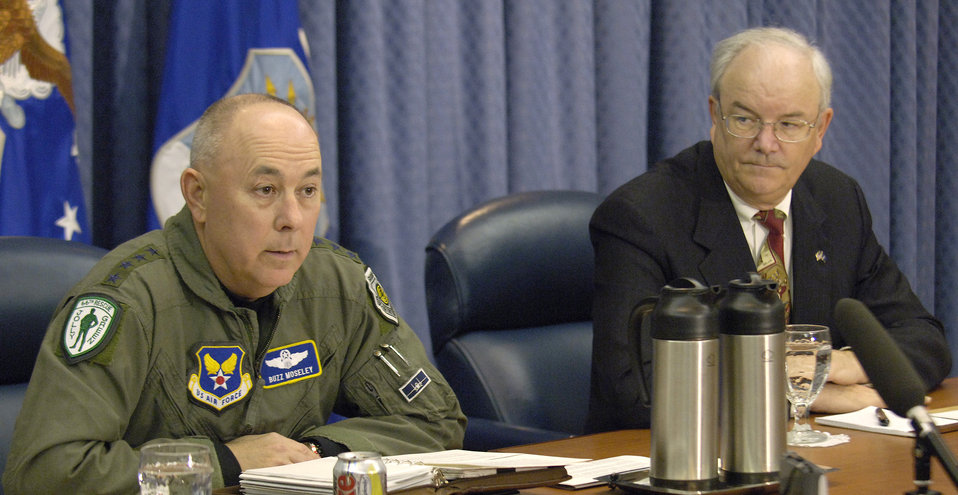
Media round table

WASHINGTON (AFPN) -- Chief of Staff of the Air Force Gen. T. Michael Moseley (left) -- with Secretary of the Air Force Michael W. Wynne at his side -- answers a reporter's question during a media round table discussion at the Pentagon Dec. 13.